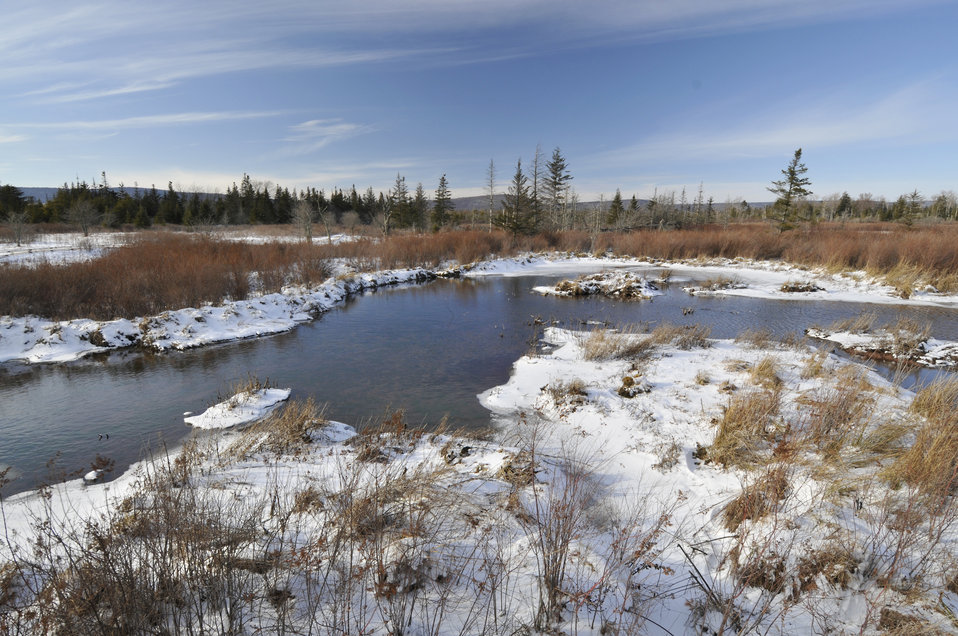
A river runs through the Canaan Valley National Wildlife Refuge in Davis, West Virginia on January 27, 2010.